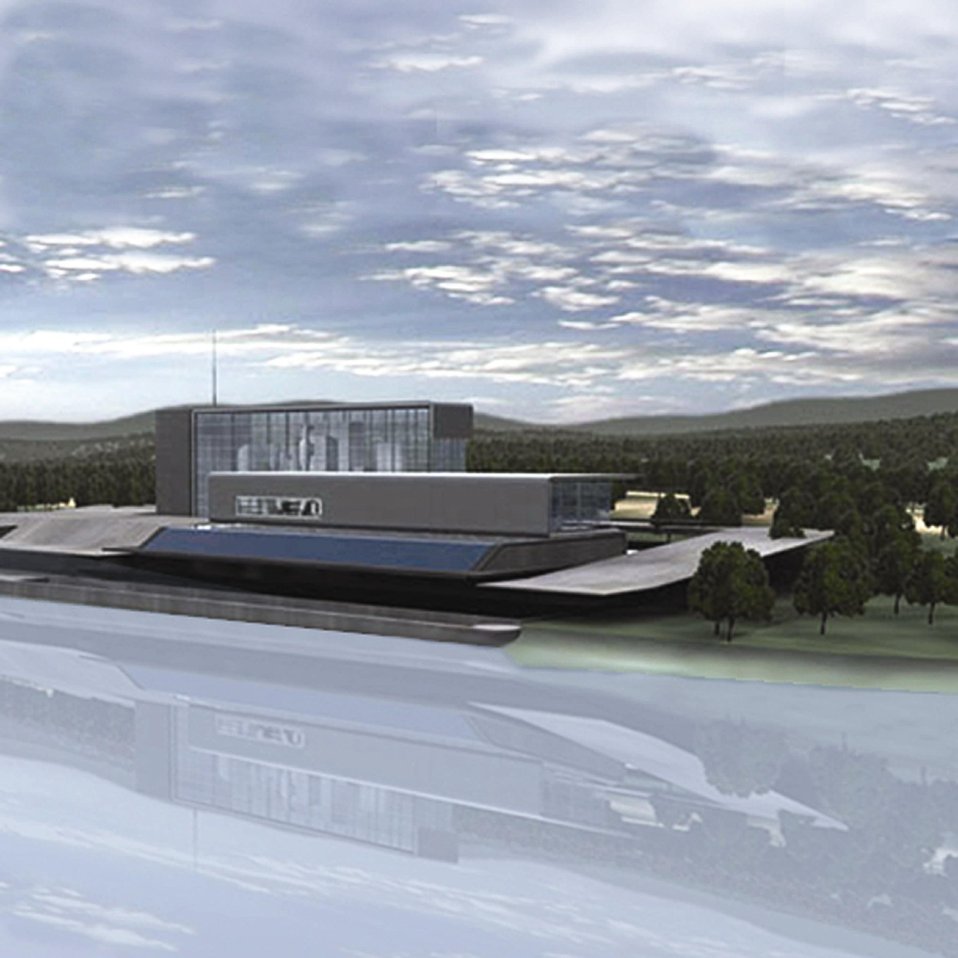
ARTIST'S CONCEPT OF FUTUREGEN, PROTOTYPE OF COAL-FUELED, POLLUTION-FREE POWER PLANT.

THE FUTUREGEN INITIATIVE ANNOUNCED BY PRESIDENT BUSH, FEBRUARY 27, 2003 IS DESIGNED TO PRODUCE A COAL FUELED PROTOTYPE PLANT THAT WILL CO-PRODUCE ELECTRICITY AND HYDROGEN WHILE PREVENTING AIR POLLUTANTS AND GREENHOUSE GASES FROM BEING RELEASED INTO THE ATMOSPHERE.